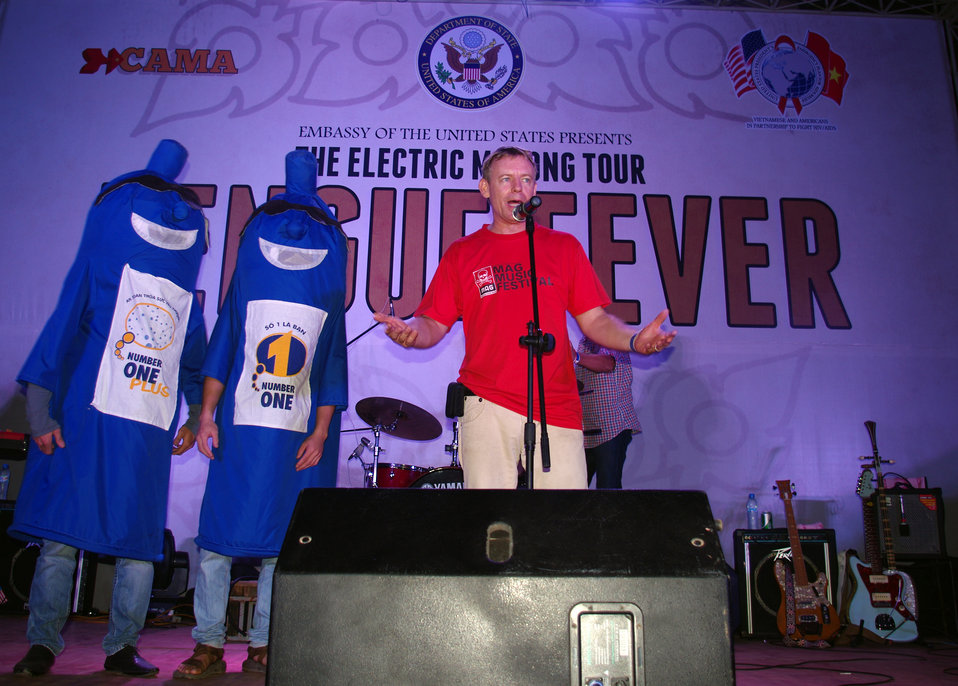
PEPFAR, U.S. Embassy Host Dengue Fever Concert in Hanoi